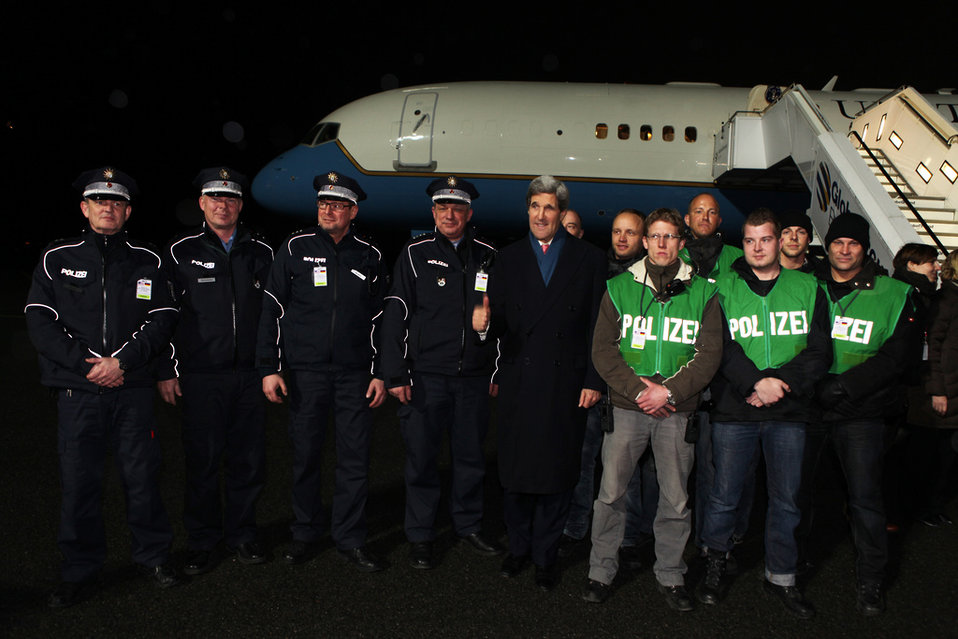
Secretary Kerry With Berlin Police Officers

U.S. Secretary of State John Kerry poses for a photo with some of the police officers who protected him during his visit to Berlin, Germany, February 26, 2013.